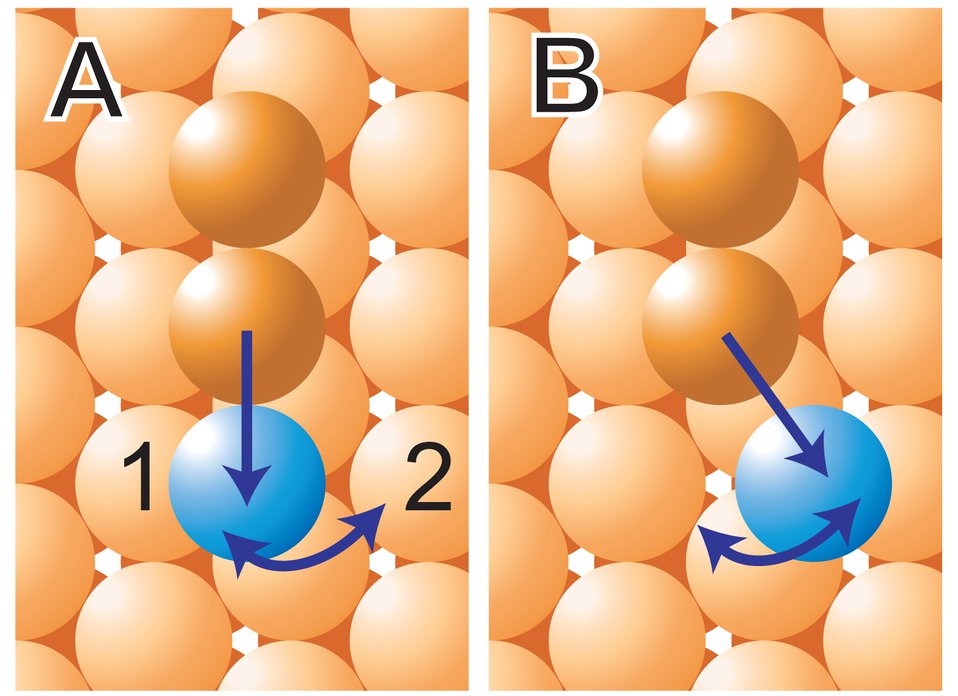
Atomic Switch Figures A and B

NIST researchers used a scanning tunneling microscope (STM) to move a single cobalt atom (blue sphere) in a small molecule back and forth between two positions on a crystal surface.